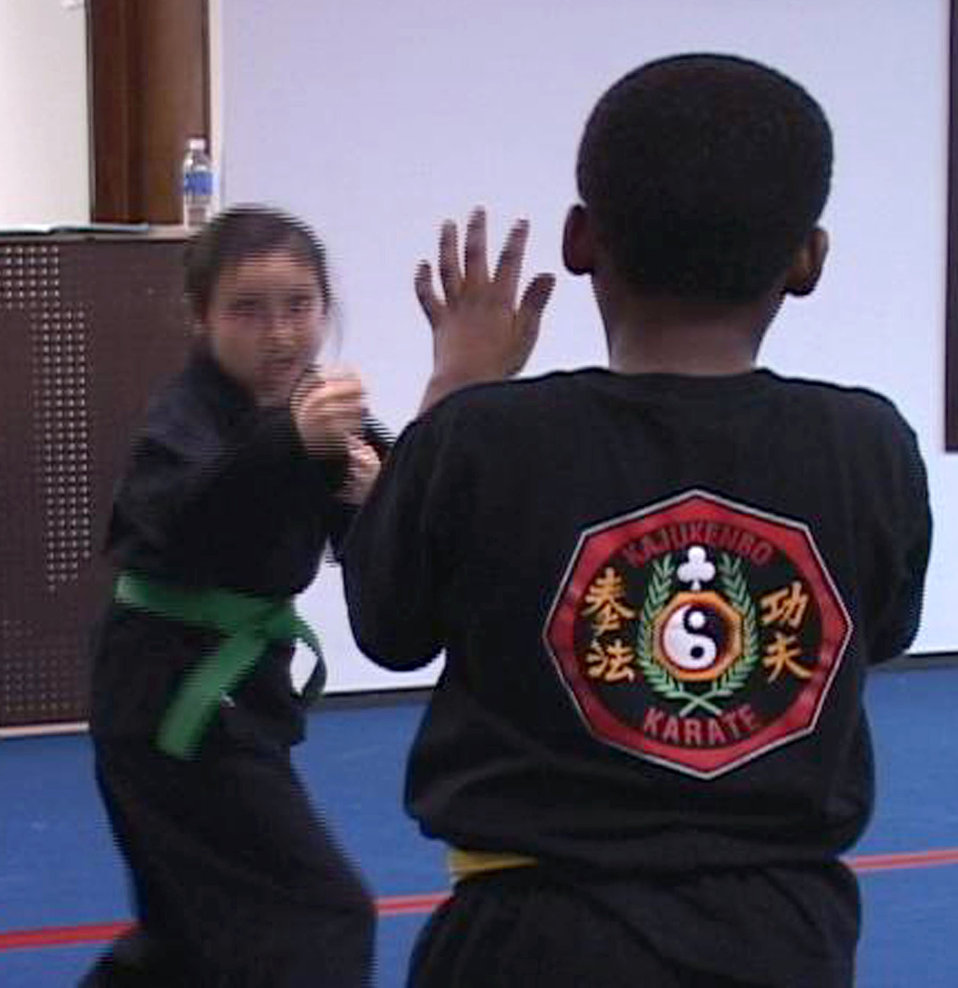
Misawa children get defensive learning kajukenbo

A Sea Hang prepares to attack Jarrell Abram, a junior yellow belt in Russell Spark's Kajukenbo class April 9 at Misawa Air Base, Japan. The students are practicing kata's, which are basic hand-to-hand defensive moves. Kajukenbo is a martial arts fighting style that traces its origins to Hawaii.